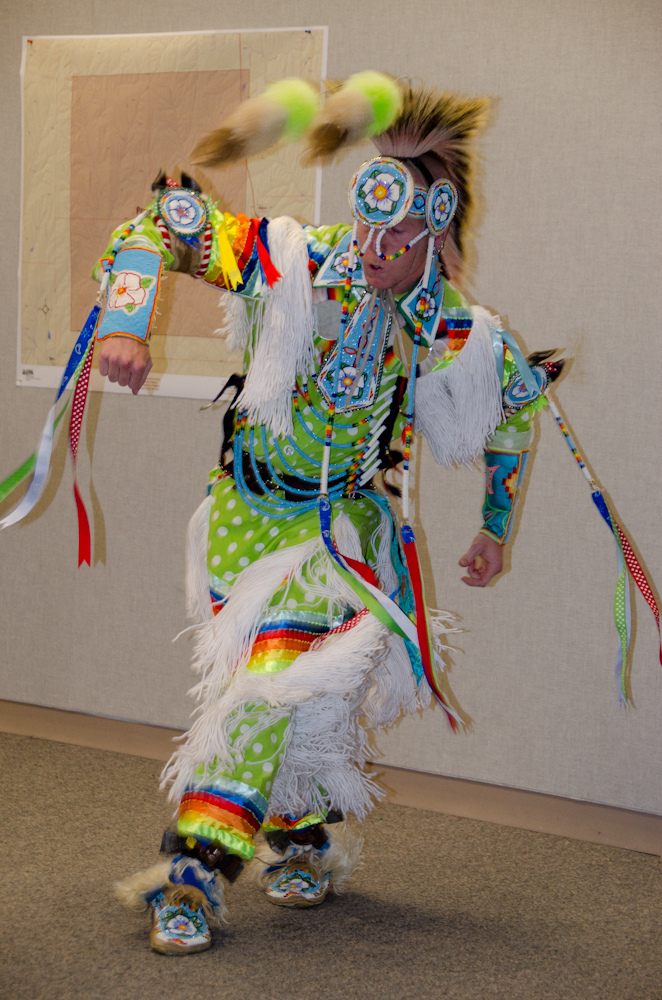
November 15, 2011, Traditional Dance Demonstration

Students from Haskell Indian Nations University demonstrated traditional tribal dancing at a U.S. EPA Region 7 event in Kansas City, KS., on November 15 and 16, 2011.

The event highlighted tribal cultures, traditions, environmental protection, and diplomatic protocols.